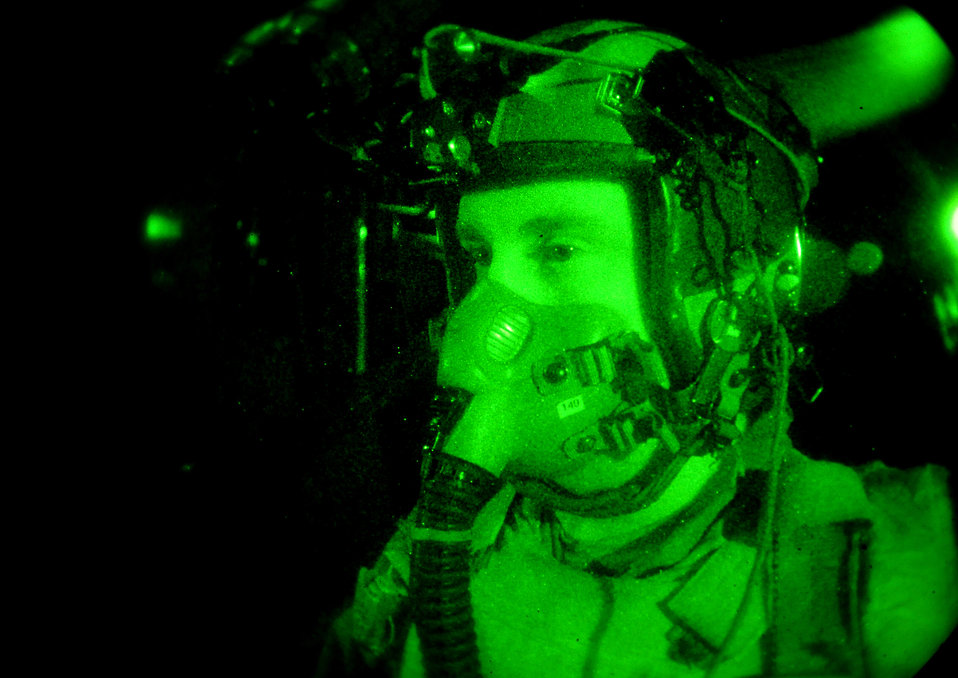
Special Tactics Airmen jump at night

Staff Sgt. Patrick Hann, MC-130 Combat Shadow loadmaster, conducts pre-jump procedures during a high altitude, low opening or HALO, mission near Fort Walton Beach, Fla., March 16, 2010, during Exercise Emerald Warrior 2010.